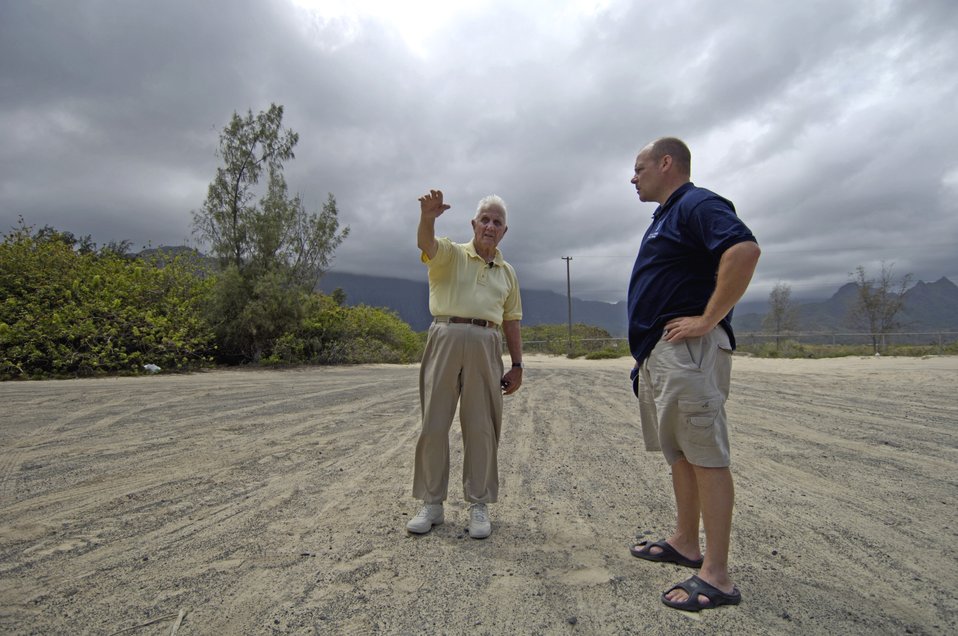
World War II veteran visits his past in Hawaii

Raymond Stehle and Master Sgt. Robert Burgess stand on the old runway at Bellows Air Force Station Sept. 30 as Mr. Stehle explains where his gunners nest was. Mr. Stehle was stationed at Bellows Army Air Field when the Japanese attacked on Dec. 7, 1941. Sergeant Burgess is from the 15th Airlift Wing Public Affairs office at Hickam Air Force Base, Hawaii.